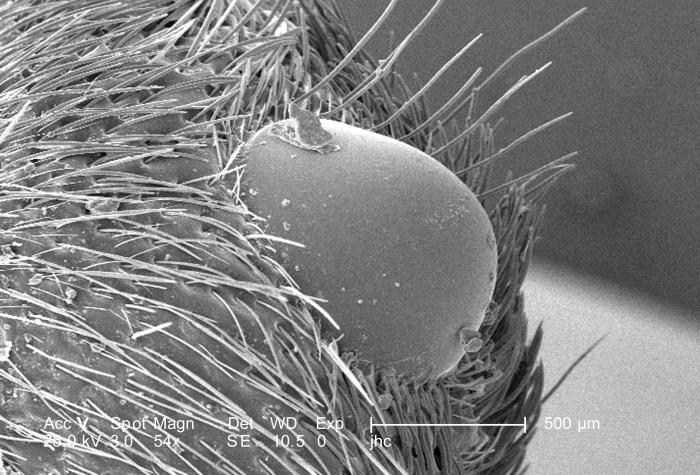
Magnified 54X under a scanning electron micrograph (SEM), this is one of the two eyes of a female velvet ant, Dasymutilla sp., with a number of debris particulates on its surface. Note the 'hairs' surrounding the eye, which are actually chitinous extensions of the exoskeletal surface. In mammals, the hair is composed of another protein known as keratin. The hairs adorning an insect's exoskeleton are known as 'setae', and interestingly, both, these sensorial setae, and its eyes, as well as its antennae all provide the organism with information about its environment, which allows it to act in accordance with its environmental elements.